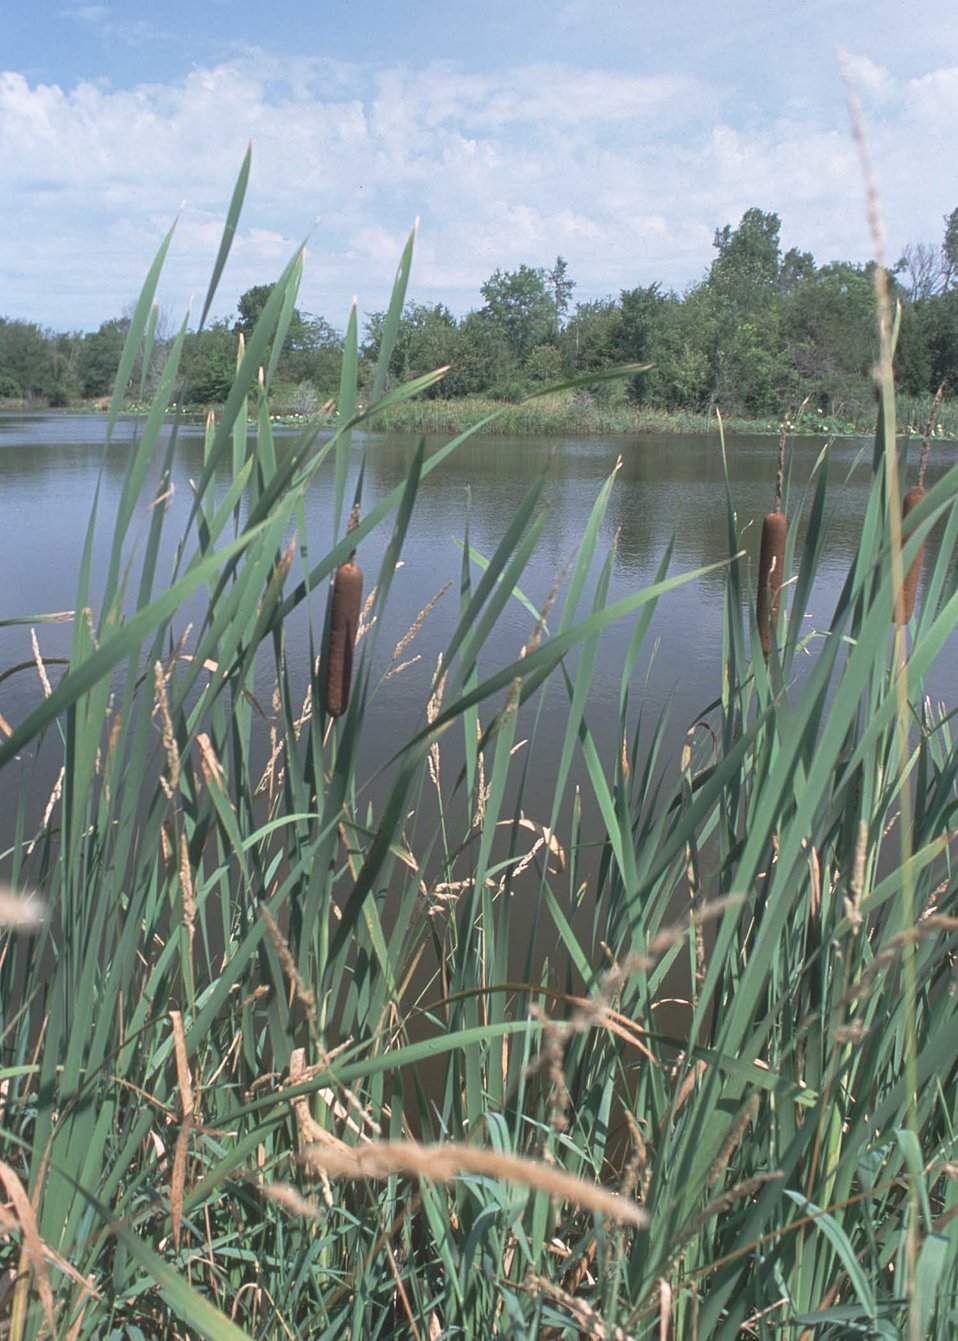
Water-loving plants on the edge of a pond in Van Buren County, Iowa.